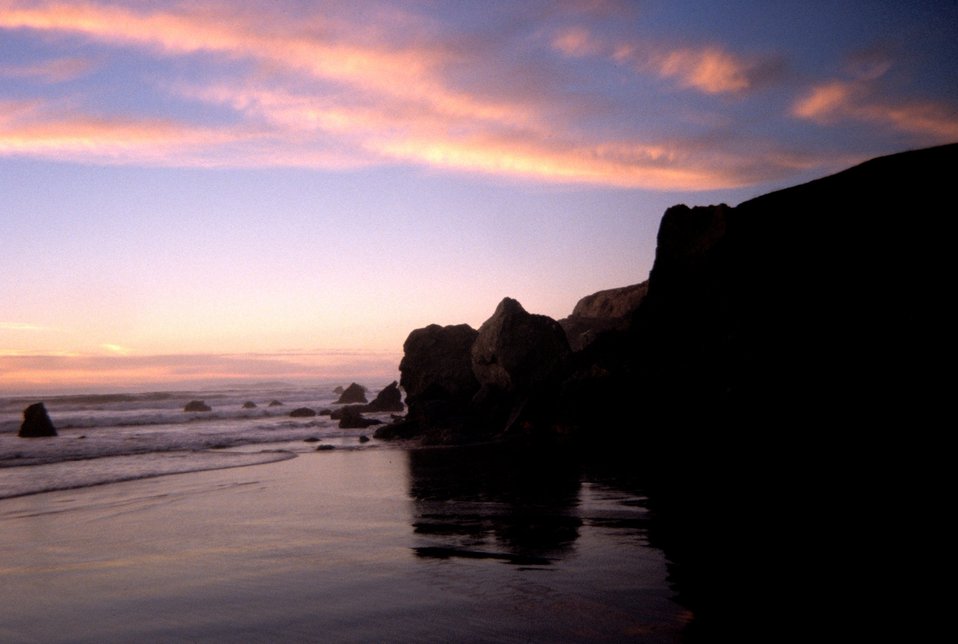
Dillon Beach